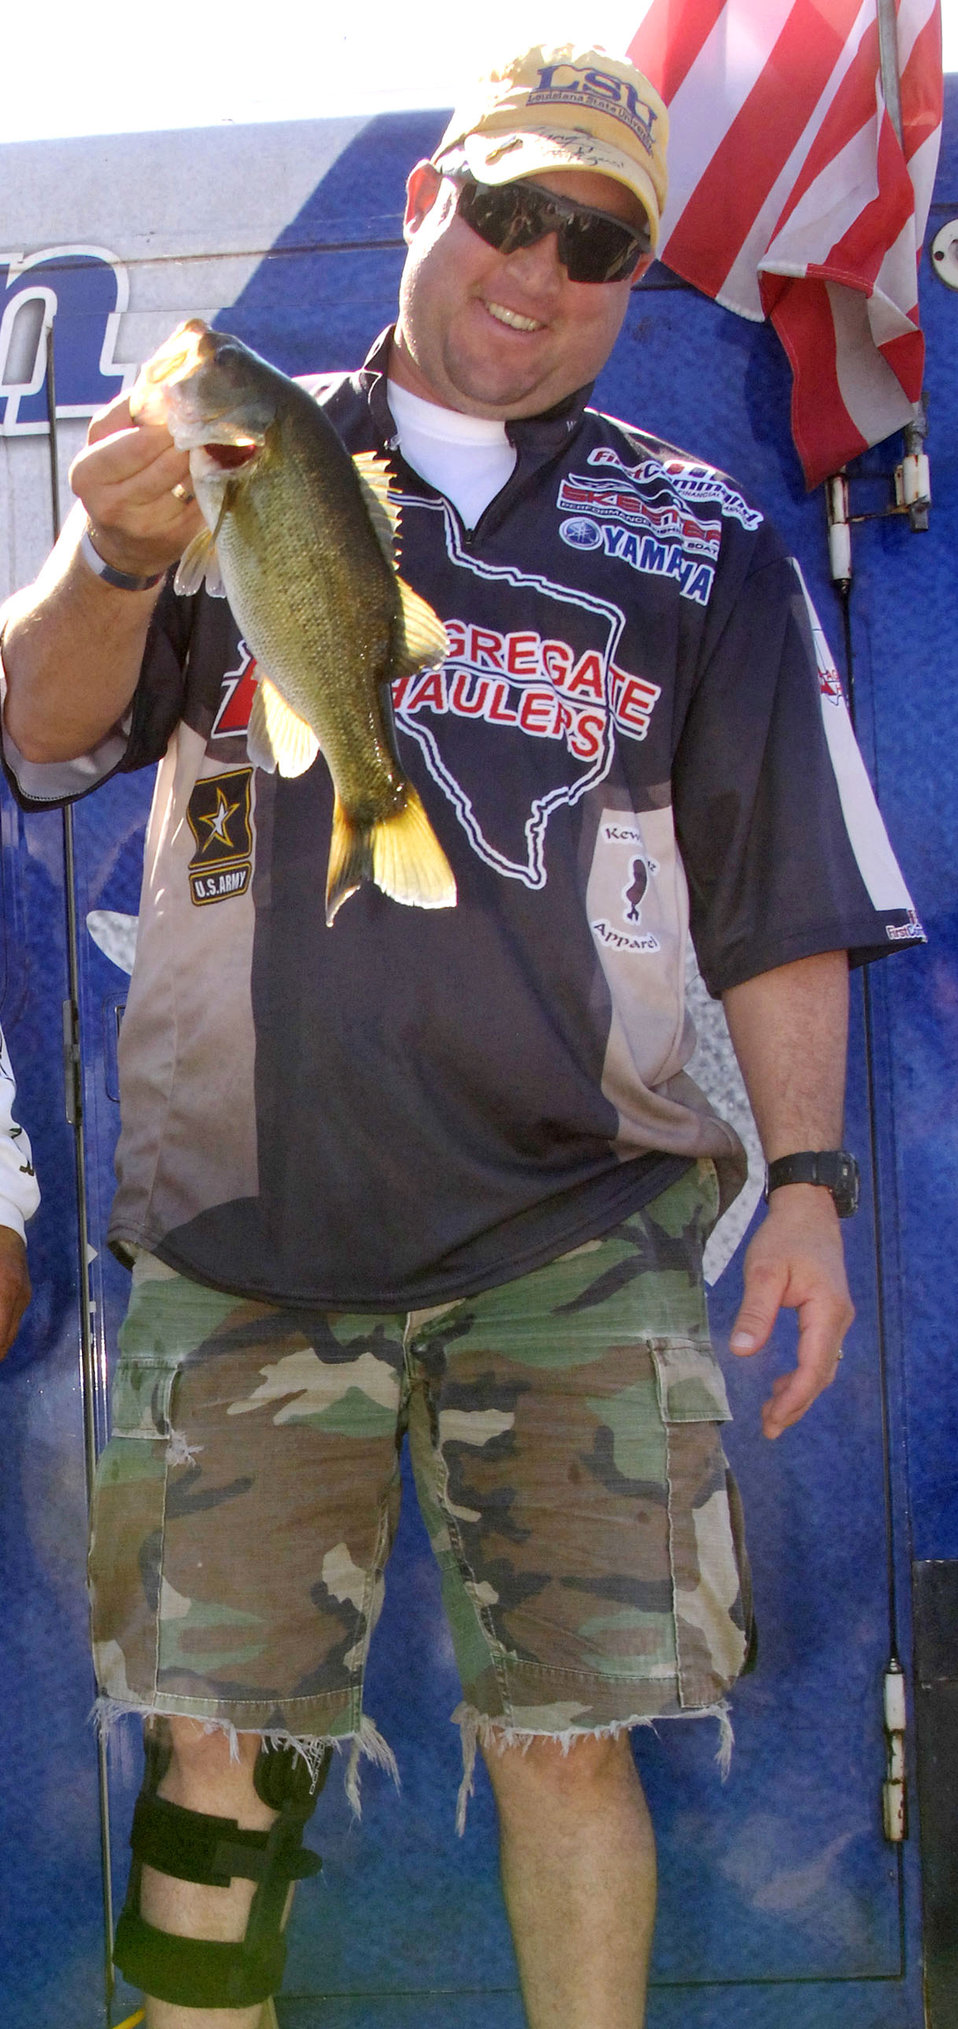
Injured servicemembers get away from hospital to fish

Army Staff Sgt. Deron Santini holds up his catch of the day, Nov. 3, a nearly two-pound largemouth bass, during the Fishing For Freedom event held for injured servicmembers at Choke Canyon Reservoir, Texas.